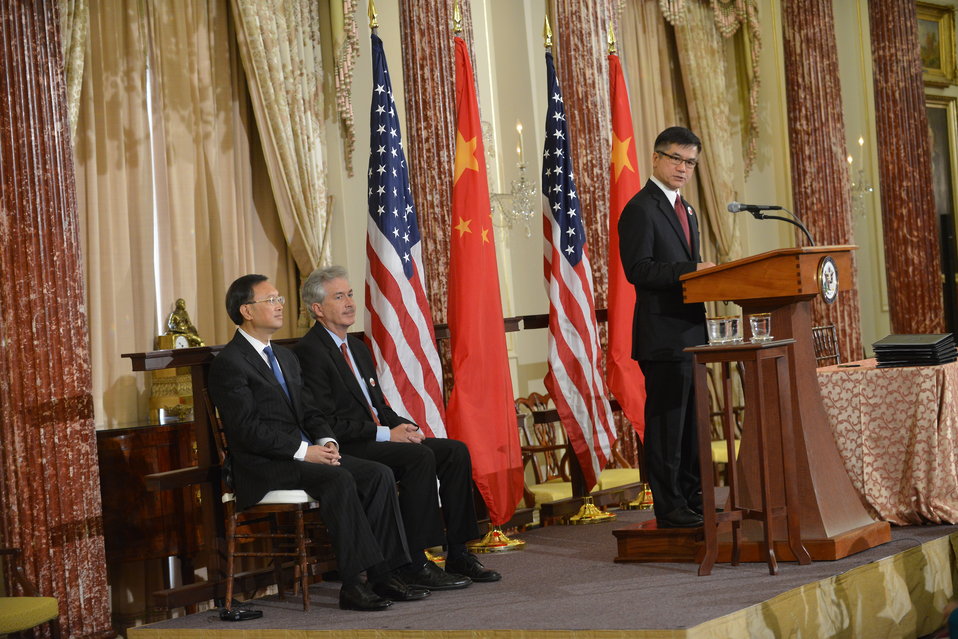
Ambassador Locke Delivers Remarks at the U.S.-China EcoPartnerships Event

U.S. Ambassador to China Gary Locke delivers remarks at an event for U.S.-China EcoPartnerships as part of the fifth round of the U.S.-China Strategic and Economic Dialogue at the U.S. Department of State in Washington, D.C., on July 11, 2013.